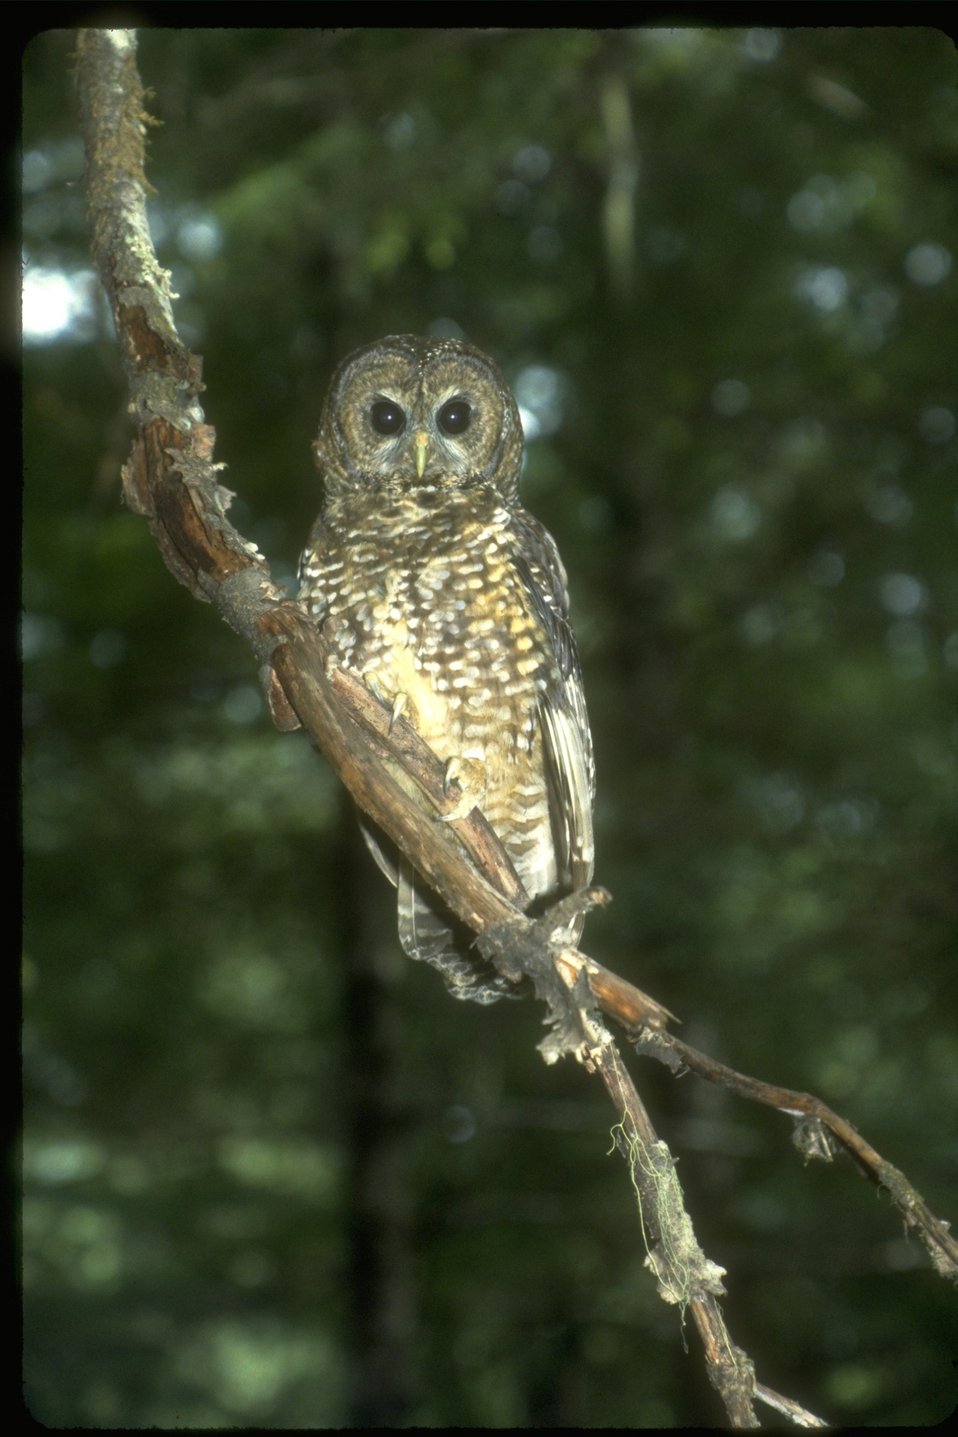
A close-up shot of a Northern Spotted Owl perched on a tree branch.